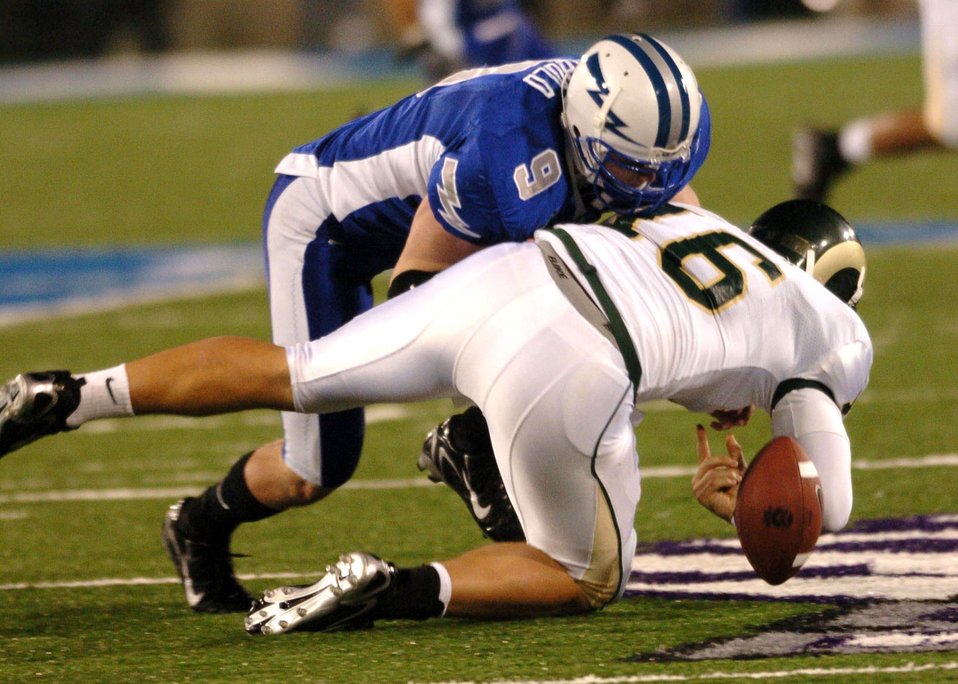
Forced Fumble

Air Force Falcon defensive back John Rabold forces Colorado State quarterback Caleb Hanie to fumble Thursday night on a third-quarter scramble. After trailing at halftime 21-3, Air Force scored 21 unanswered points in the second half to win, 24-21.